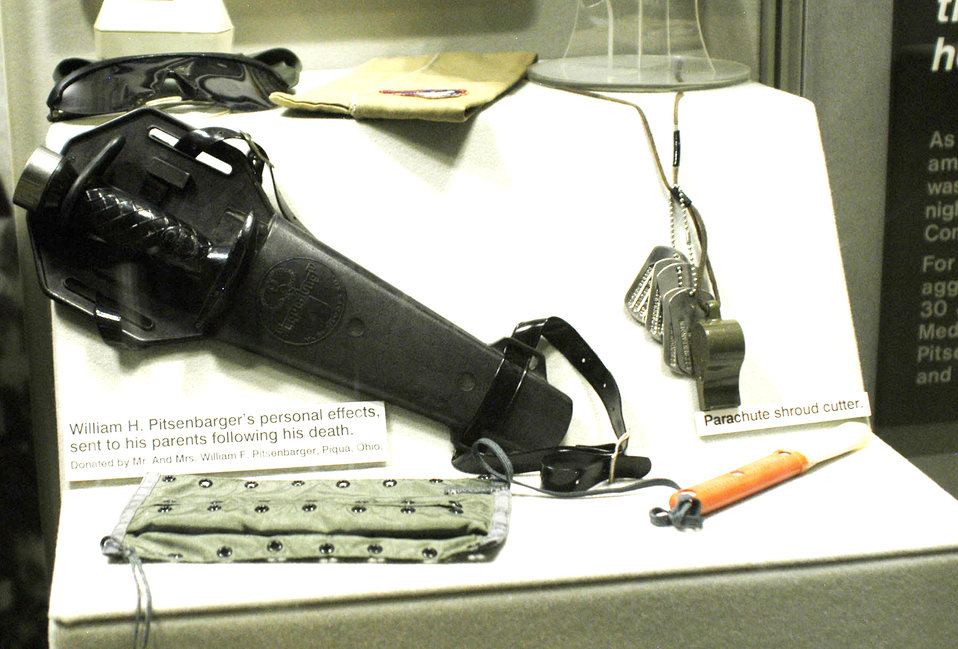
Families always have been essential to the Air Force

William H. Pitsenbarger's personal effects sent to his parents following his death are on display at the National Museum of the U.S. Air Force in Dayton, Ohio. These items are on display in the Modern Flight Gallery at the museum.